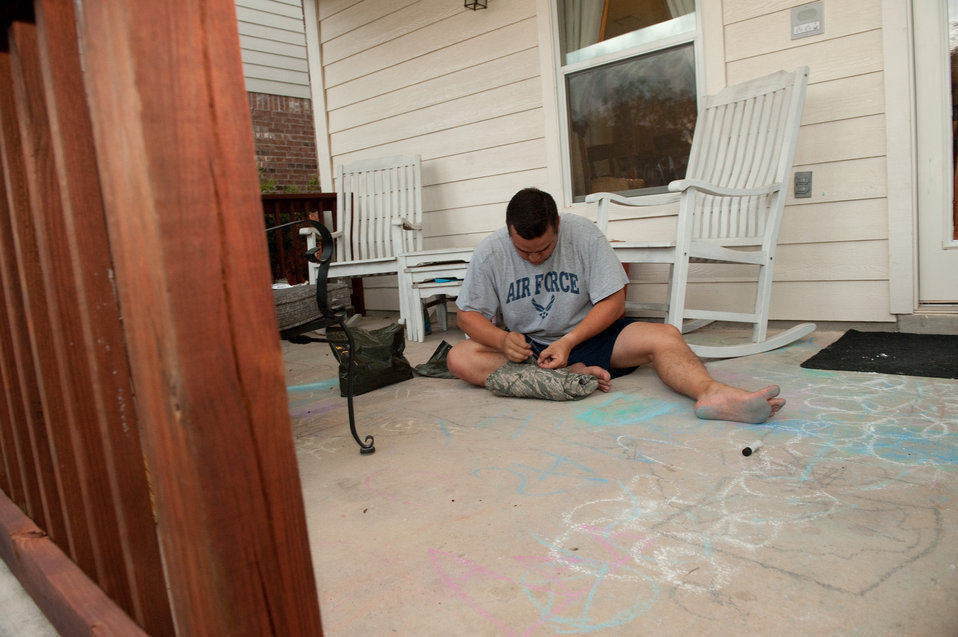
Blogging Couple Deployment preperation

Master Sgt. Rudy Gamez sits on his back porch and tightens the knot on a rolled uniform blouse before it is slipped into a bag of permethrin insect repellent and water emulsion at his home in San Antonio, Texas, on July 13, 2010. The bag will be used to soak the blouse or pants of a uniform set, in a repellent and water emulsion, providing some protection for many washings. He is preparing for Combat Skills Training and his sixth deployment to Southwest Asia. Later this year he and his wife Tech. Sgt Christina Gamez will both be deployed and blogging about their experiences.